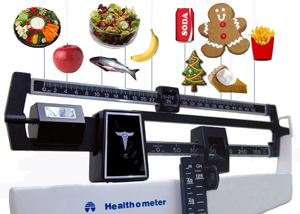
Stay on nutrition band wagon during holidays

Healthy suggestions can keep the scale from tipping this holiday season.